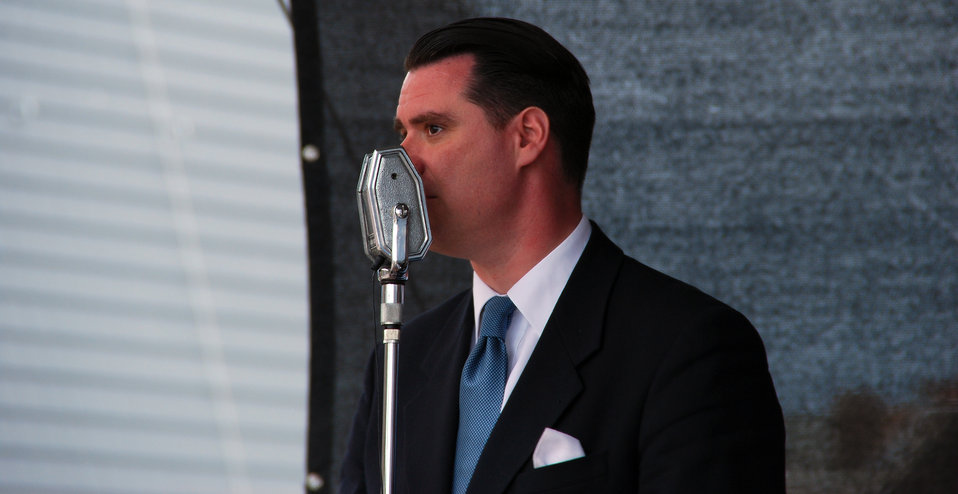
Andrej Hermlin, Deutscher Pianist und Bandleader